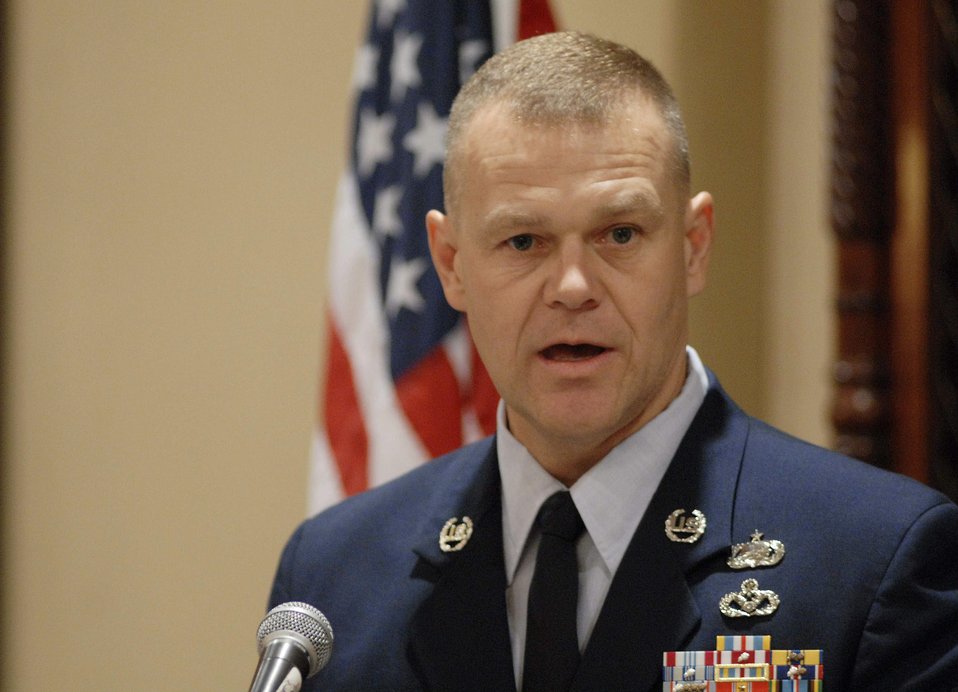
CMSAF Roy honored

Chief Master Sgt. of the Air Force James A. Roy gives a speech July 28 in Washington D.C. during an Air Force Association breakfast honoring him. Chief Roy used the event to talk about the educational opportunities afforded to him and many Airmen around the world and thanked the association for its support to Airmen and their families.